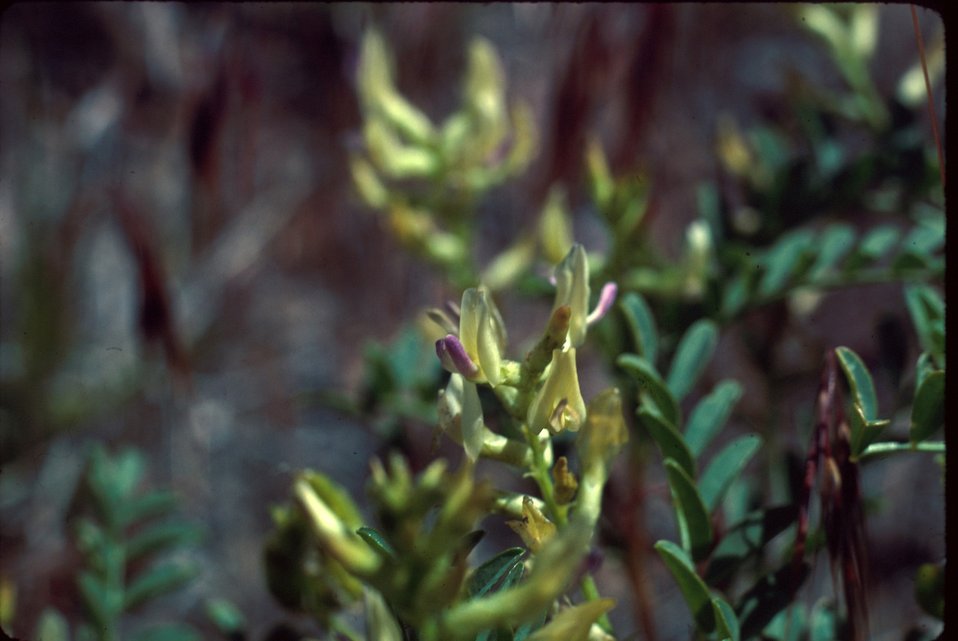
Astragalus lentiginosus milkvetch Wildflower